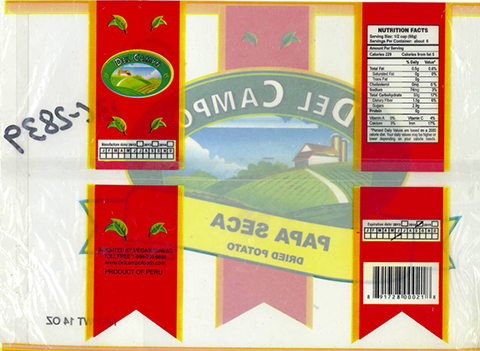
RECALLED – Del Campo Papa seca / DRY POTATO 24x14 oz.

December 13, 2013 – Product Recall – Megabusiness LLC Issues Alert on Undeclared Sulfites in Del Campo Papa Seca / DRY Potato 24x14 oz.